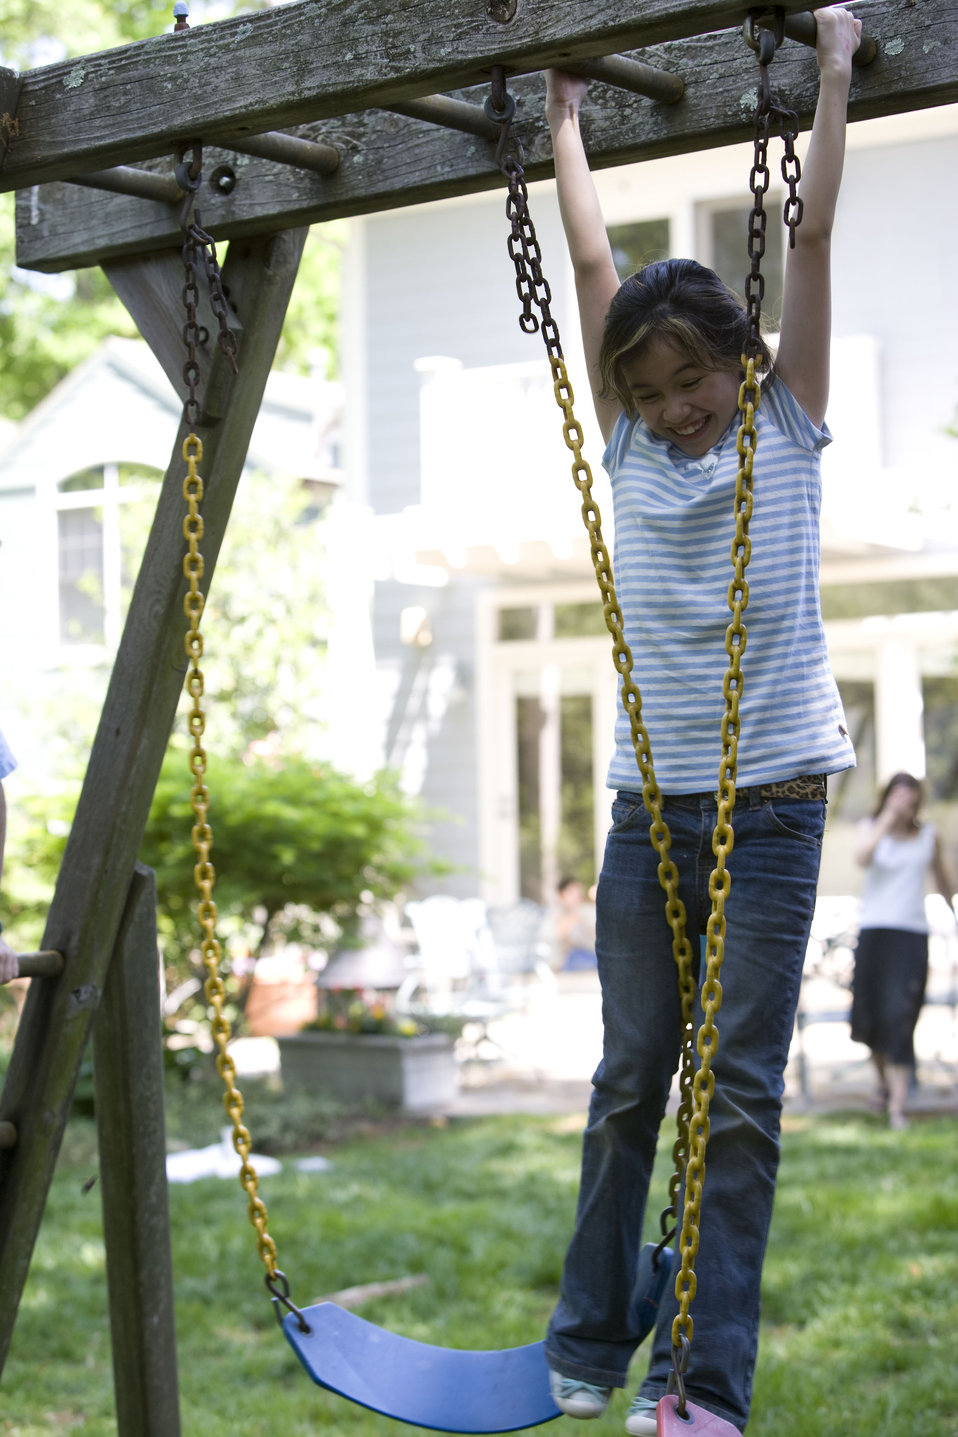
This young girl was playing outside on her backyard swing set, while in the background her mother could be seen calling out to her, probably with a warning to be careful. It's important to note that older wooden playsets may have been treated with arsenic and/or creosote, and therefore, parents need to know if these chemicals were used in their manufacture.